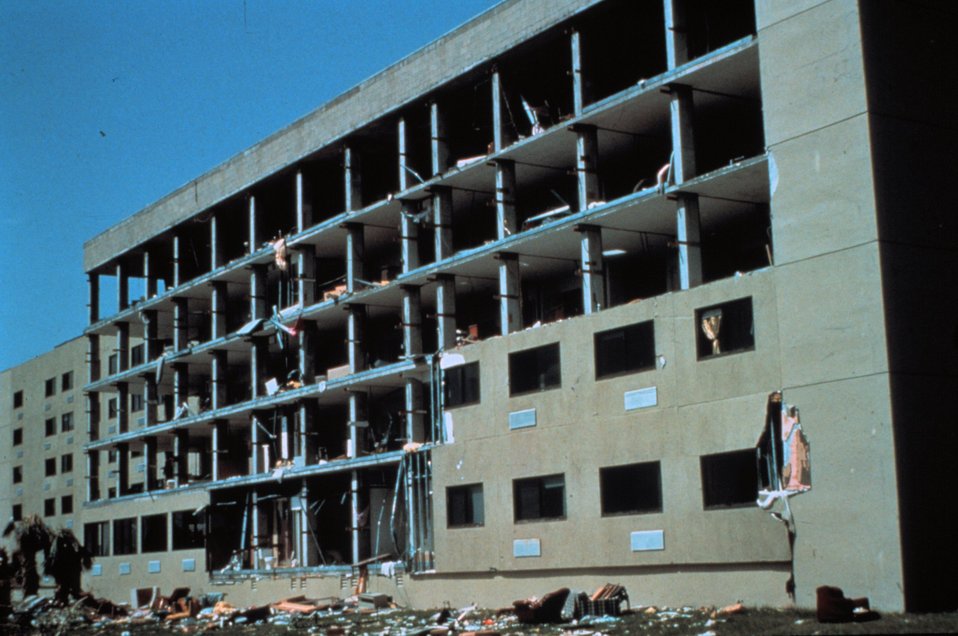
Hurricane Andrew - Shearwall of apartment building literally pealed off by winds